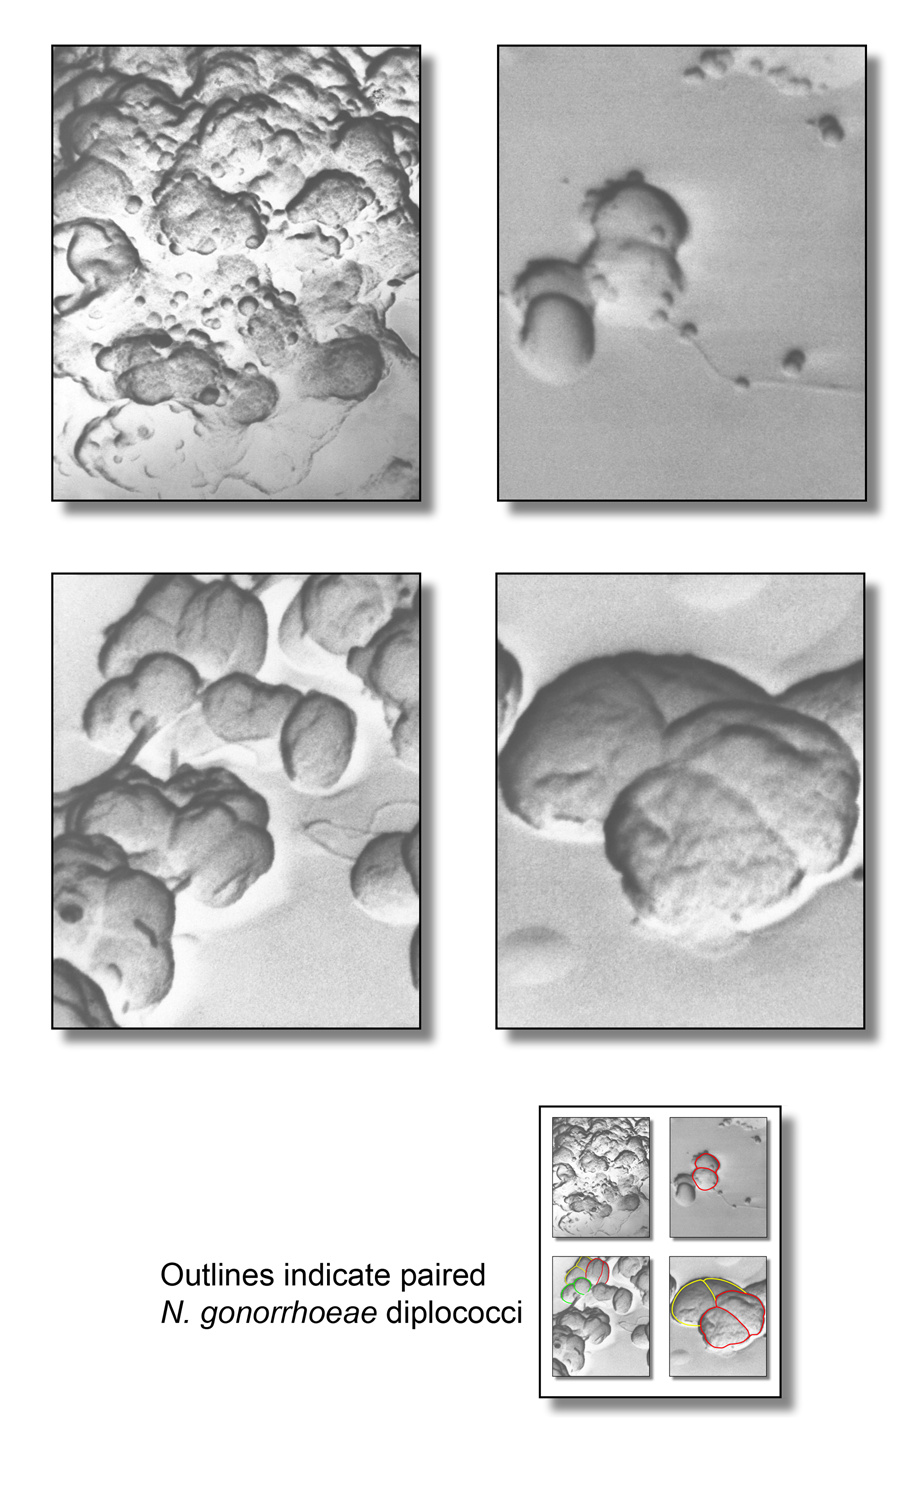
This scanning electron micrograph (SEM) depicted four views of Gram-negative Neisseria gonorrhoeae bacteria. Under this highly-magnified view, details of the protective, adhesive matrix, which this colony had secreted is revealed. This molecular matrix consists of polymeric constituents known as the 'extracellular polymeric substance', or EPS. See PHIL 10250 for an enlarged view of the colorized inset, which distinguishes the diplococcal pairs.